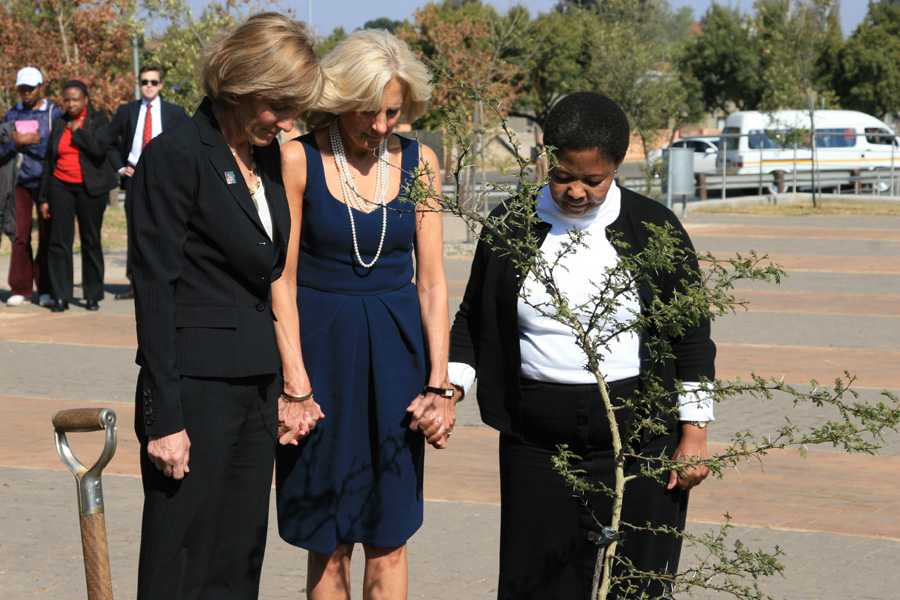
Dr. Jill Biden and Liz Berry Gips Plant Tree to Honor Youth Killed in 1976

Dr. Jill Biden, wife of Vice President Joseph Biden, and Liz Berry Gips, wife of U.S. Ambassador to South Africa Donald H. Gips, plant a tree at the Hector Pieterson Museum in Soweto, South Africa, to honor the youth killed during the anti-apartheid protests of 1976 on June 12, 2010.